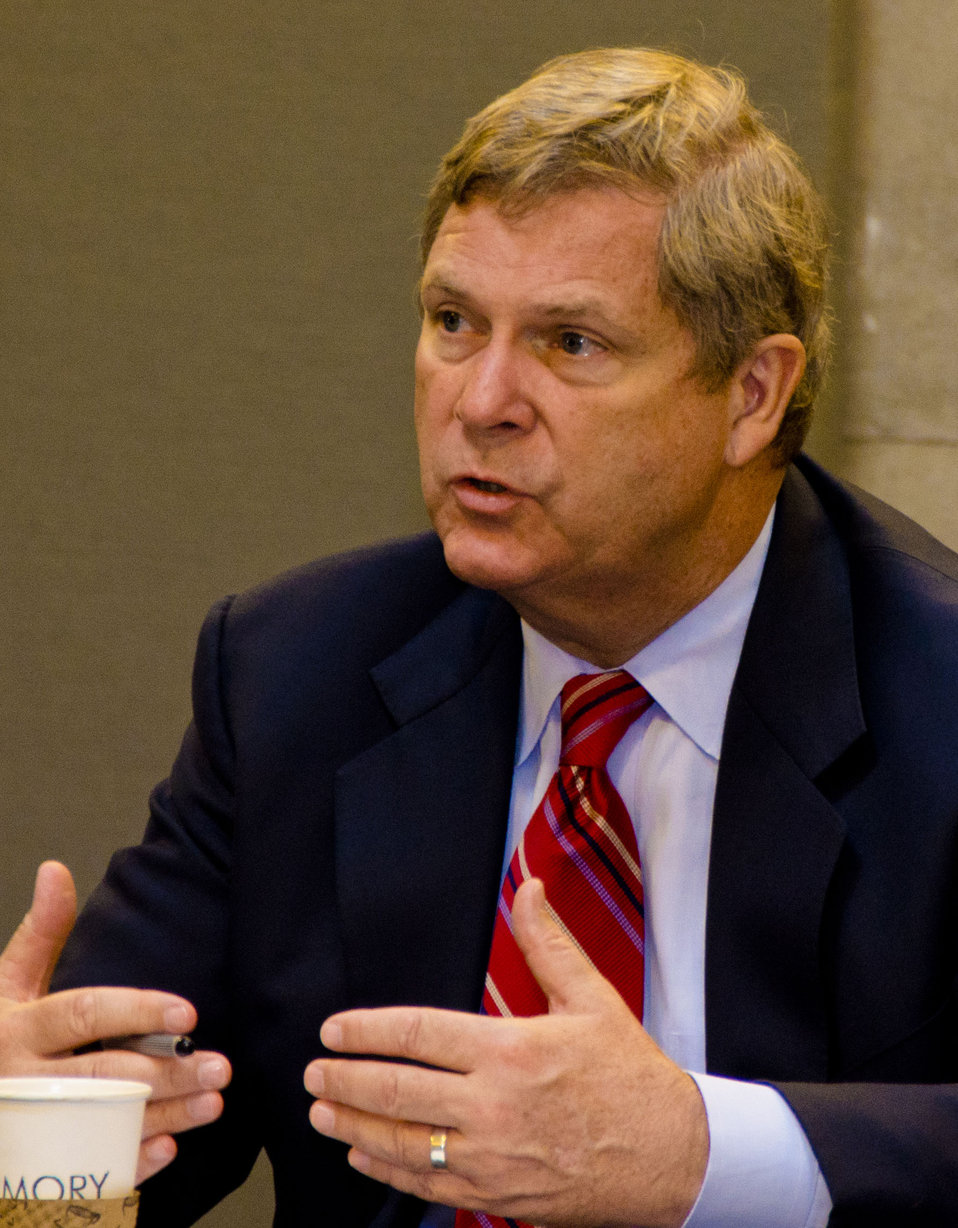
Agriculture Secretary Tom Vilsack of the United States Department of Agriculture explaining the American Jobs Act to a group from the Portland, OR area on Tuesday, September 27, 2011.